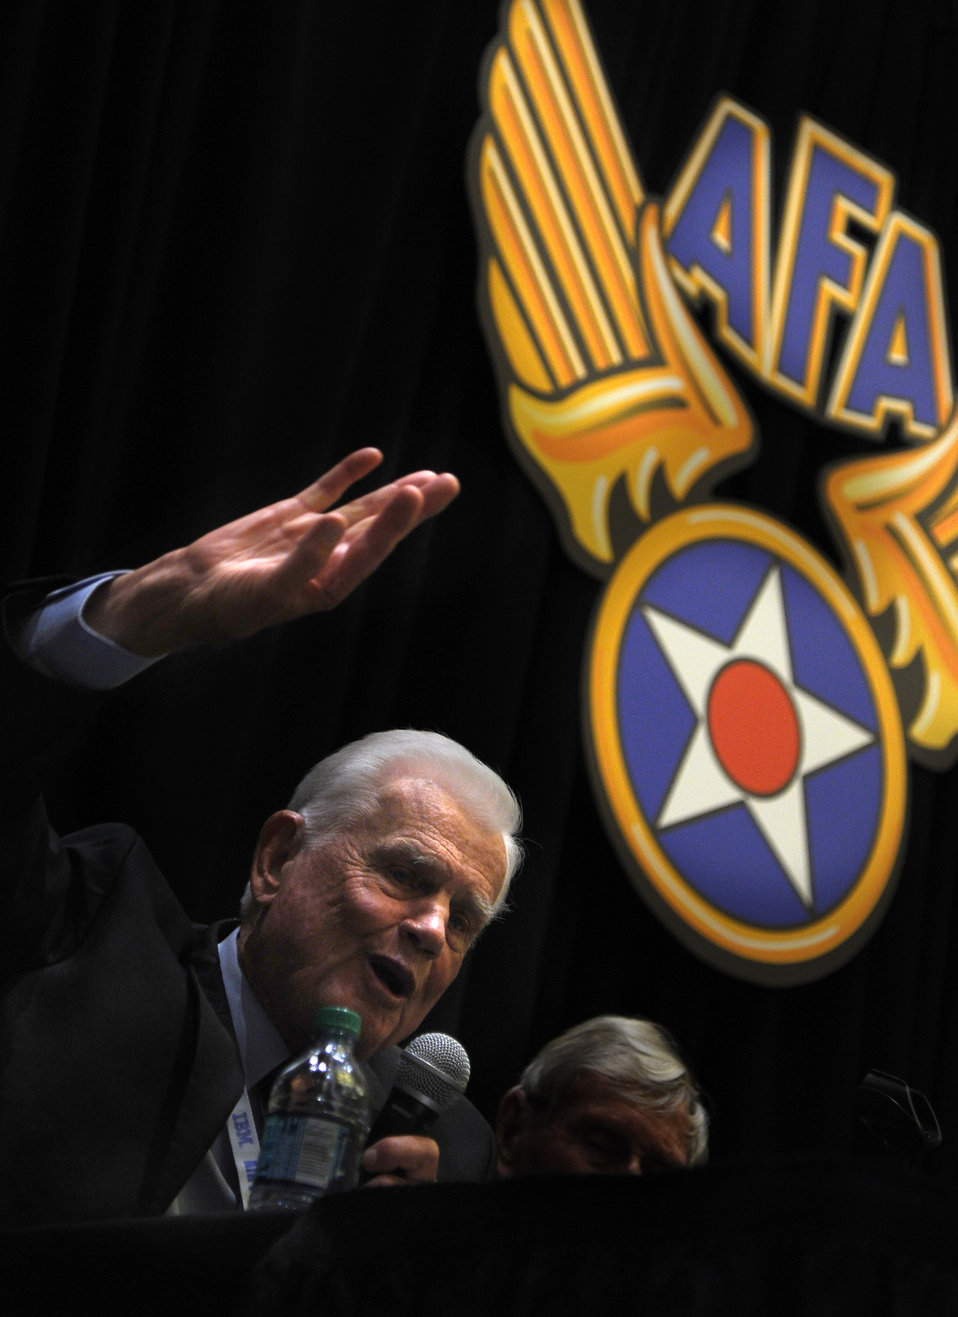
Retired Col. Clarence Anderson recalls various memories of flying during
World War II during the Air Force Association Air and Space Conference and Technical Exposition on Sept. 17, 2012, in Washington. Anderson's anecdote was just one of many
shared on the panel as the former fighter pilots spoke about the issues they
faced as part of the Army Air Corps during that era.